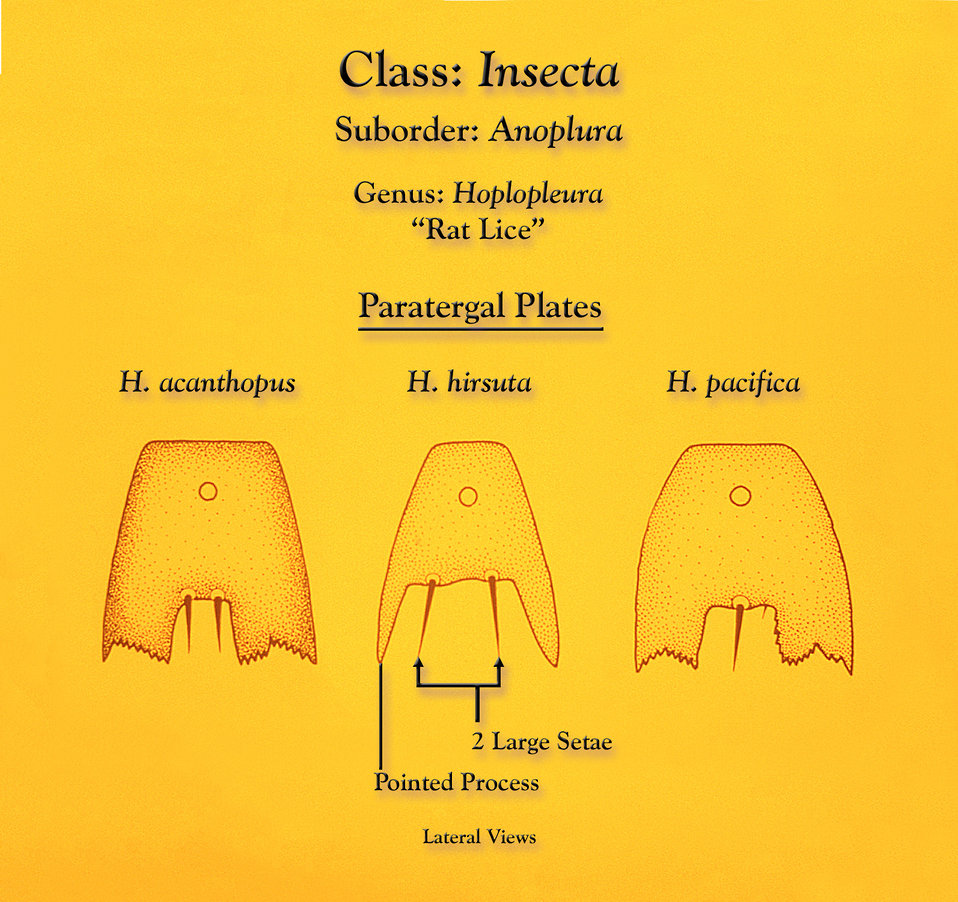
This illustration depicts the morphologic characteristics of the lateral paratergal plates of three species from the genus Hoplopleura